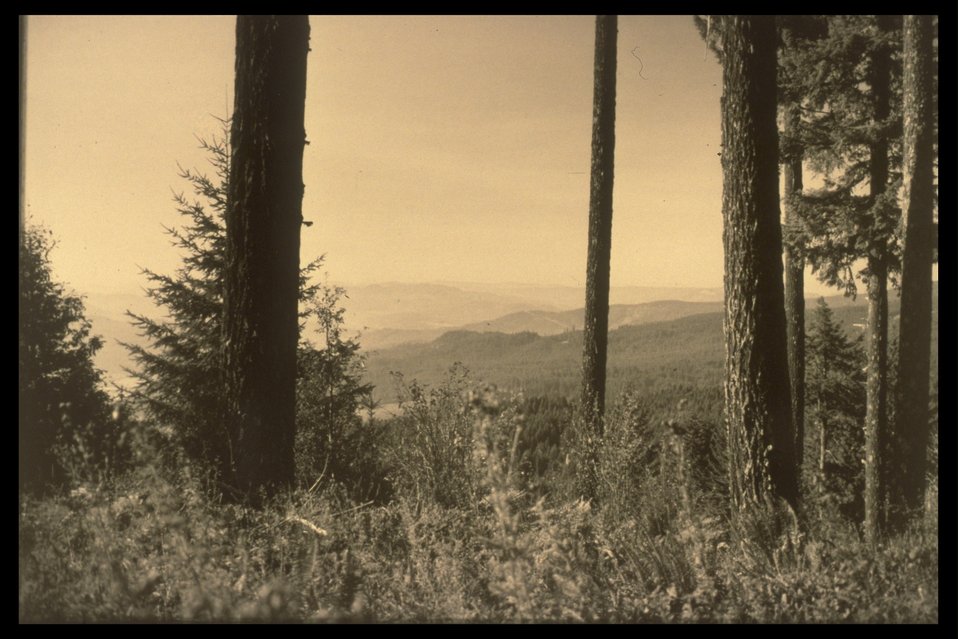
Black & White photo: view through trees opening to forest in background.